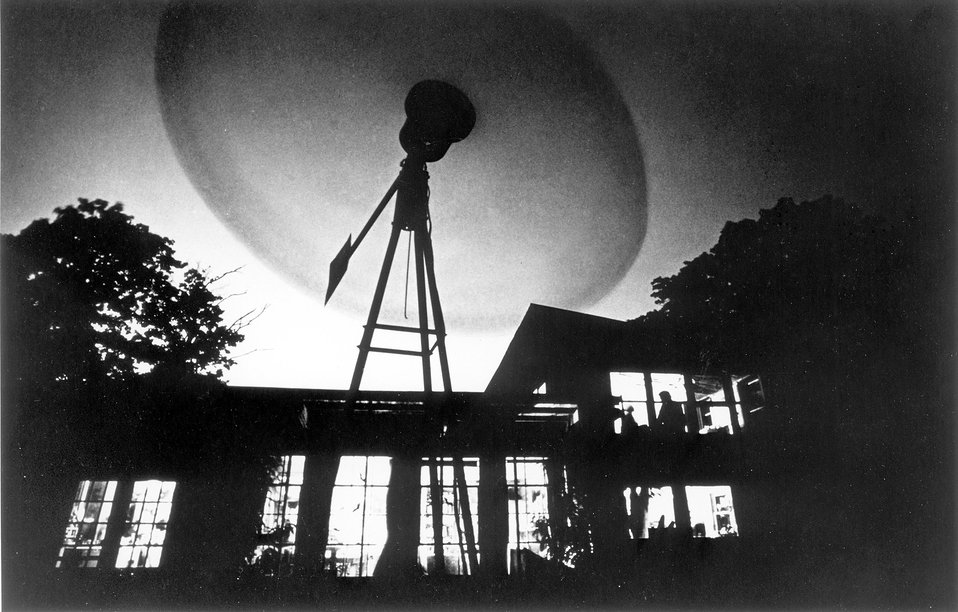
When Henry Clews moved his family to a Maine hilltop in 1973, the power company wanted $3,000 to hook him up. Instead Clews set up two wind-driven generators; 20 six-volt batteries and 60 two-volt batteries store power for periods of calm, and a gasoline-fed generator serves as backup. c. undated